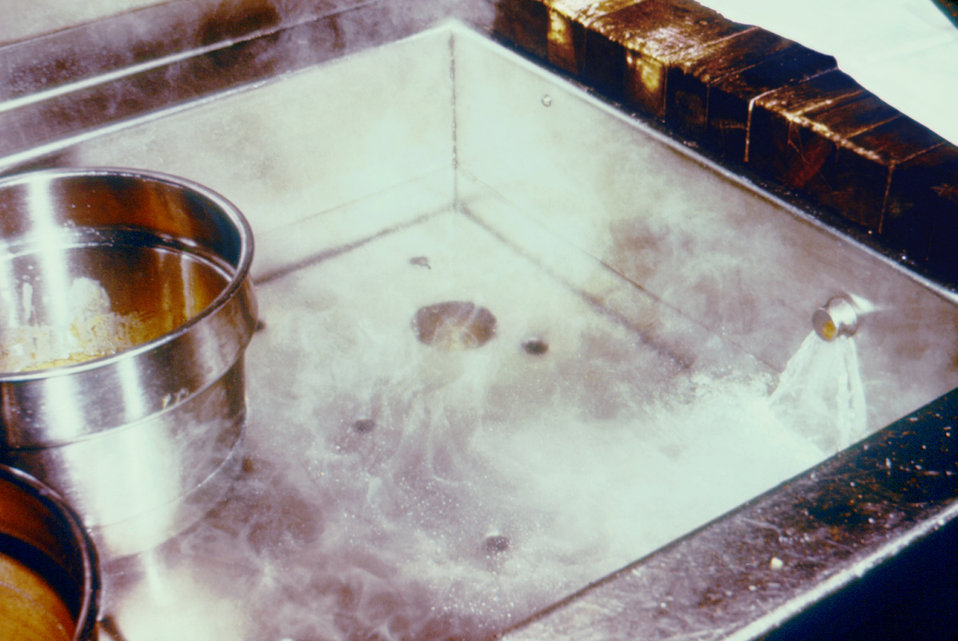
This kitchen sink used a submerged water supply inlet, which makes the unsanitary back-siphonage of dirty water possible.